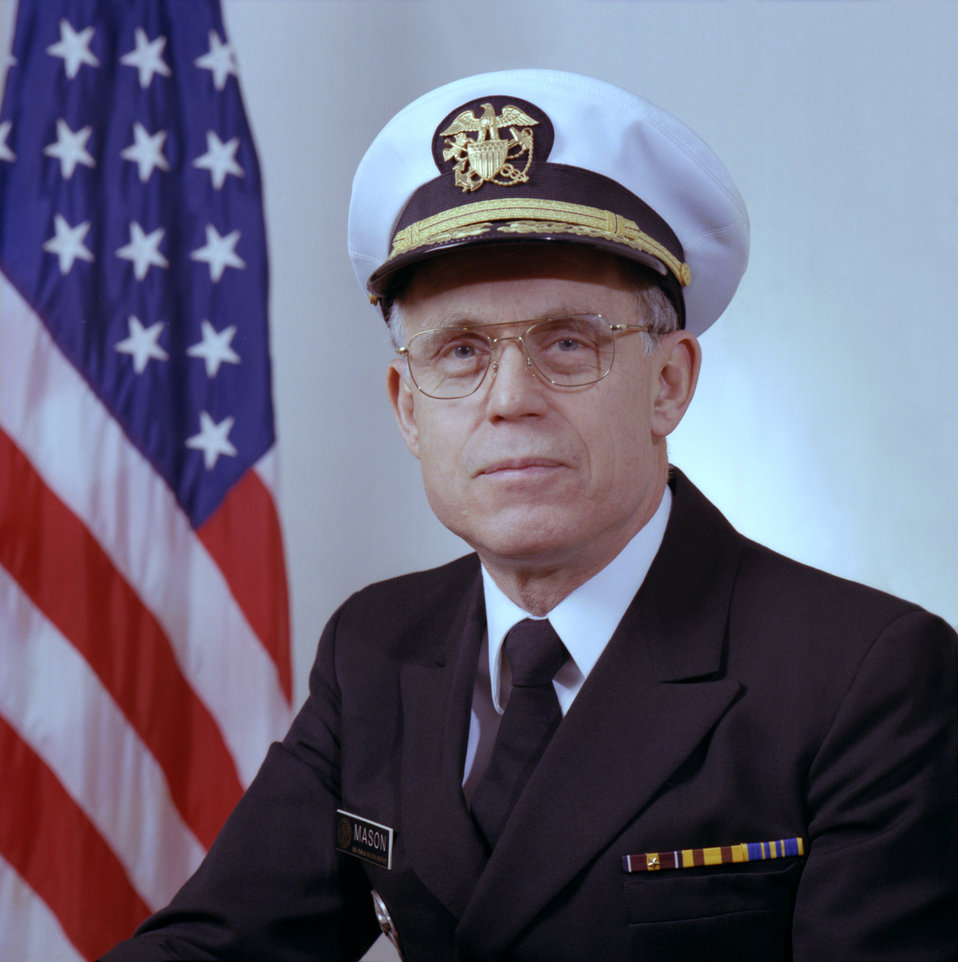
This was a photographic portrait of former Centers for Disease Control (CDC) Director, James O. Mason, M.D., M.P.H. Dr. Mason was appointed to the organization's Directorship in 1984 by then former President Ronal Reagan, and served as its Director from 1983 until 1989. Dr. Mason was also a former Assistant Secretary for Health, and as such, oversaw 'the United States Public Health Service (USPHS) Commissioned Corps, providing it with strategic and policy direction.'